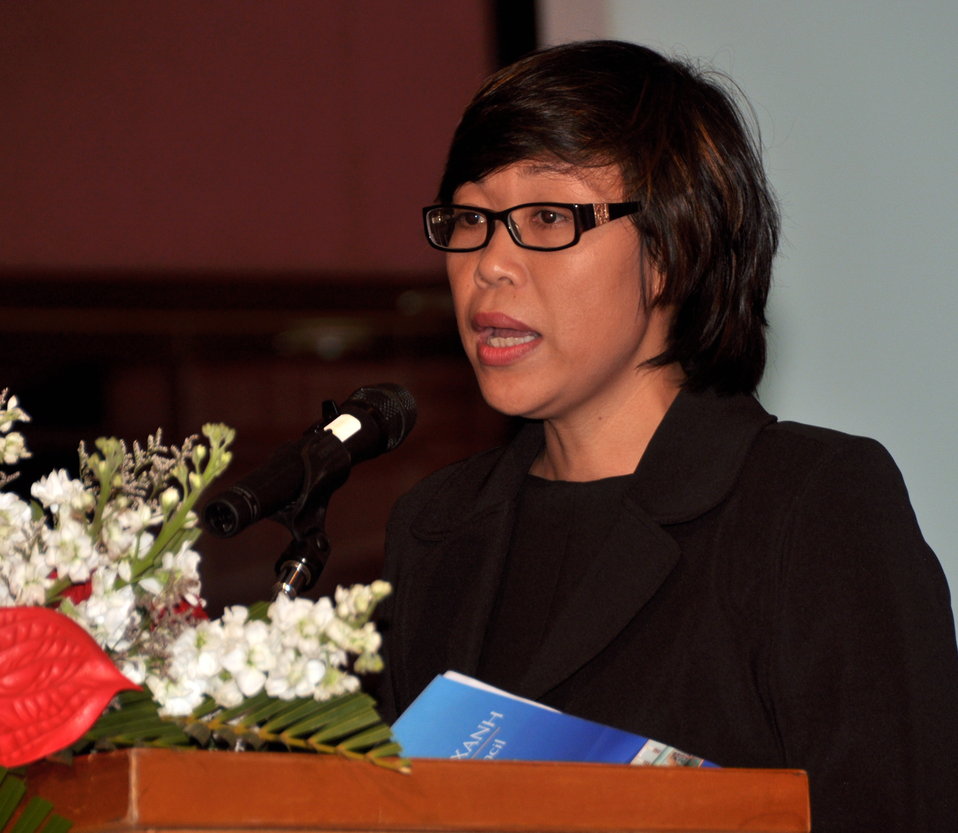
Blue Ribbon Employer Council Awards for Hiring Vietnamese with Disabilities

Hanoi, April 17, 2013